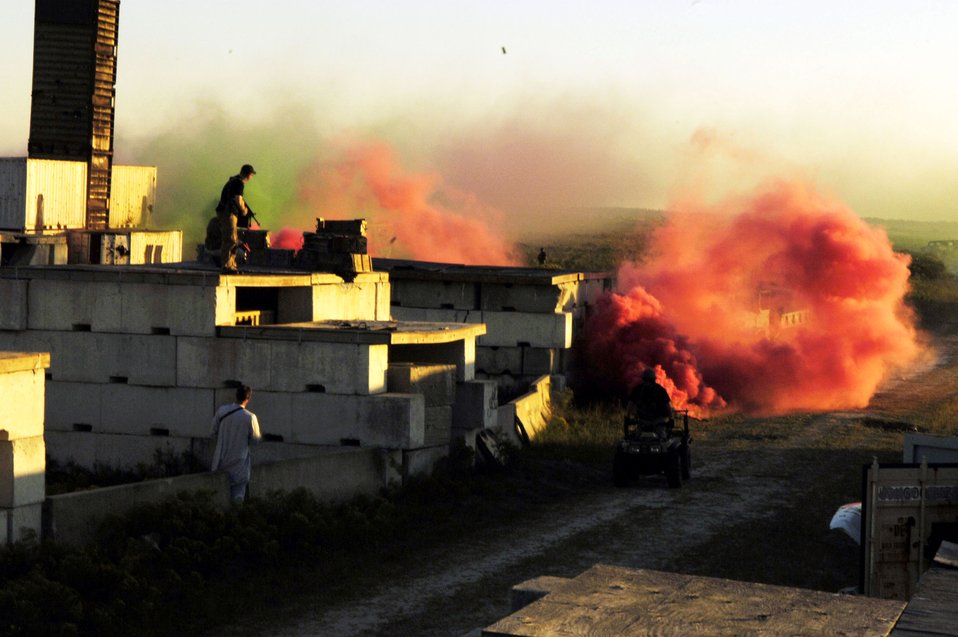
Warfighters gather to train for close-air-support operations

A simulated enemy village is engulfed in smoke, signaling a successful airstrike by A-10 Thunderbolt II close-air-support aircraft during Atlantic Strike VI Nov. 6 at the Avon Park Air Ground Training Complex in Avon Park, Fla. Joint terminal attack controllers embedded in Army units direct aircraft to target precise locations during scenarios designed to simulate intense combat engagements. Atlantic Strike training is focused on preparing JTACs and Army joint fires observers for urban close-air-support operations prior to deployment to Iraq and Afghanistan.